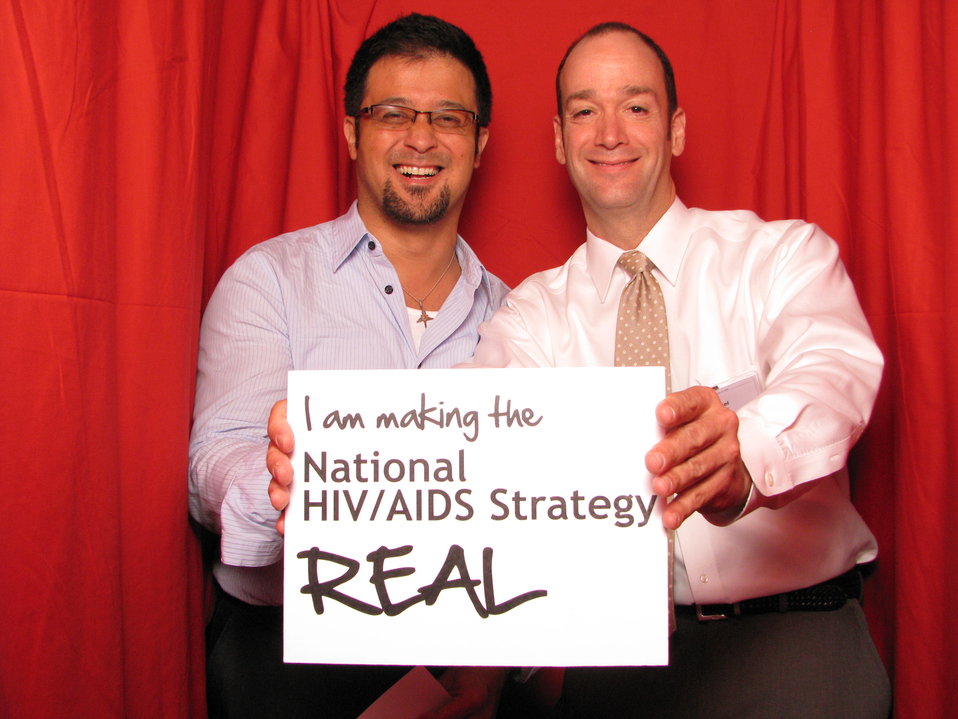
I am making the National HIV/AIDS Strategy REAL

From the AIDS.gov photo booth at the U.S. Conference on AIDS, September 2010 (Orlando, FL).